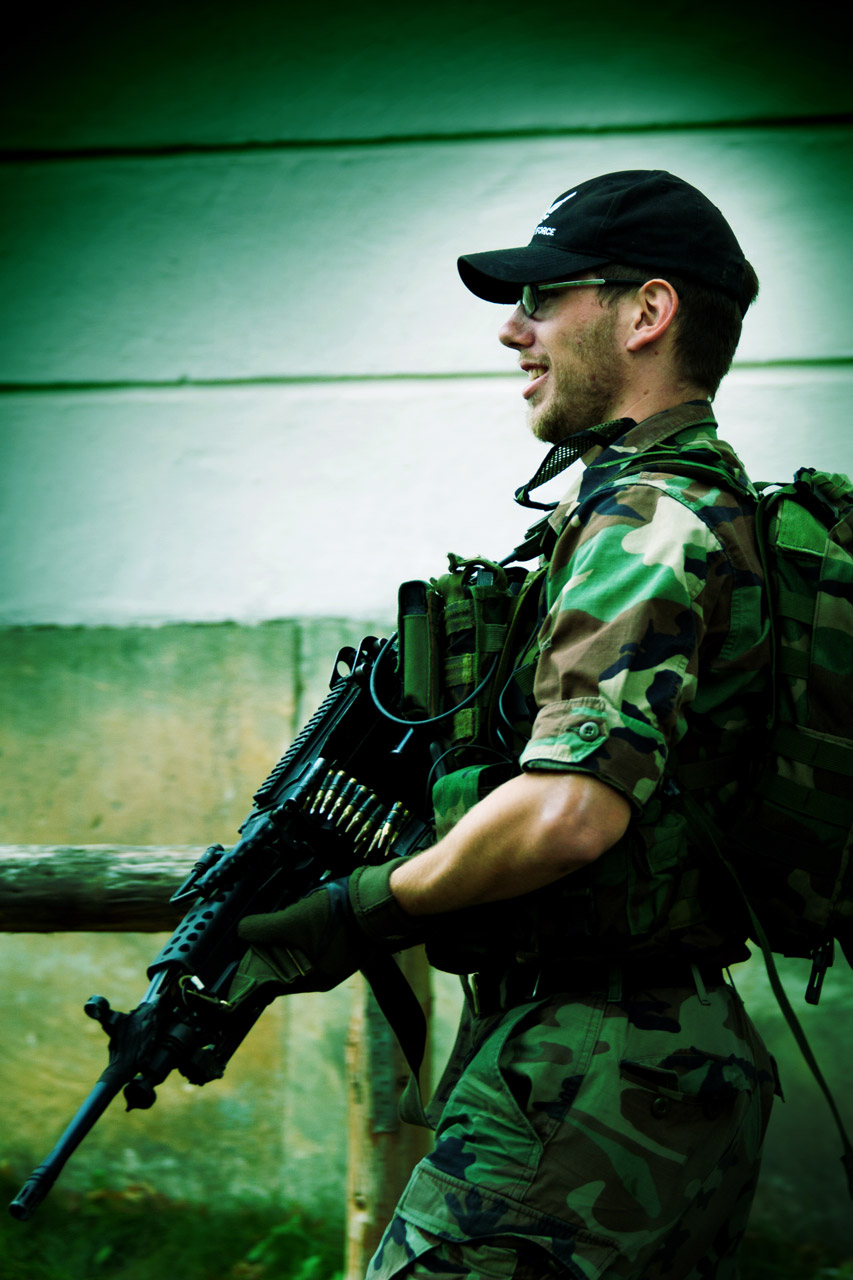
Soldier with machine gun

Soldier in camouflage clothing with a machine gun.